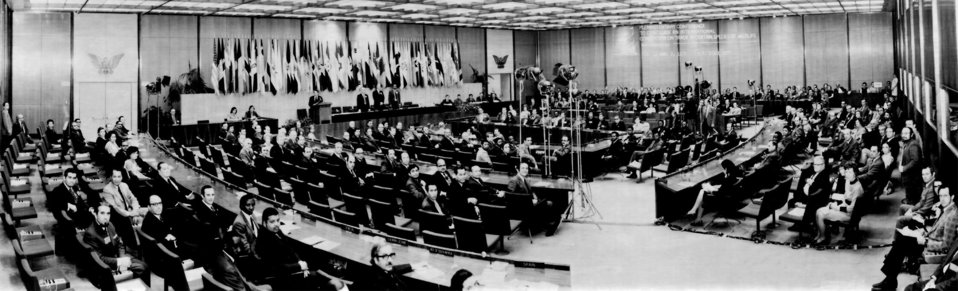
#26B - CITES History Tidbit

Countdown to CoP16: Did you know that the final text of CITES was first signed in Washington, DC? Representatives from over 80 countries came together in our nation’s capital to discuss and finalize the Preamble, the first 25 Articles, and the 3 Appendices of the Convention. And on March 3, 1973, 21 countries signed the treaty into existence.

CITES CoP1 Plenipotentiary Meeting. Taken by U.S. Department of State, Washington, D.C., 1973.